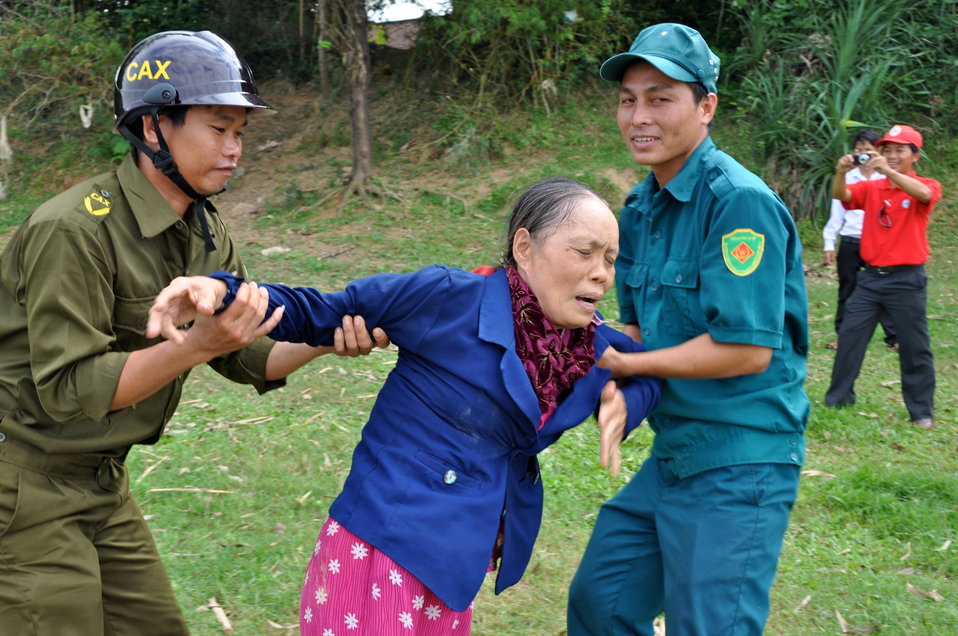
USAID, Red Cross Support Disaster Response Drill in Duy Hoa Commune, Quang Nam Province

Duy Hoa Commune, Quang Nam Province
December 5, 2012